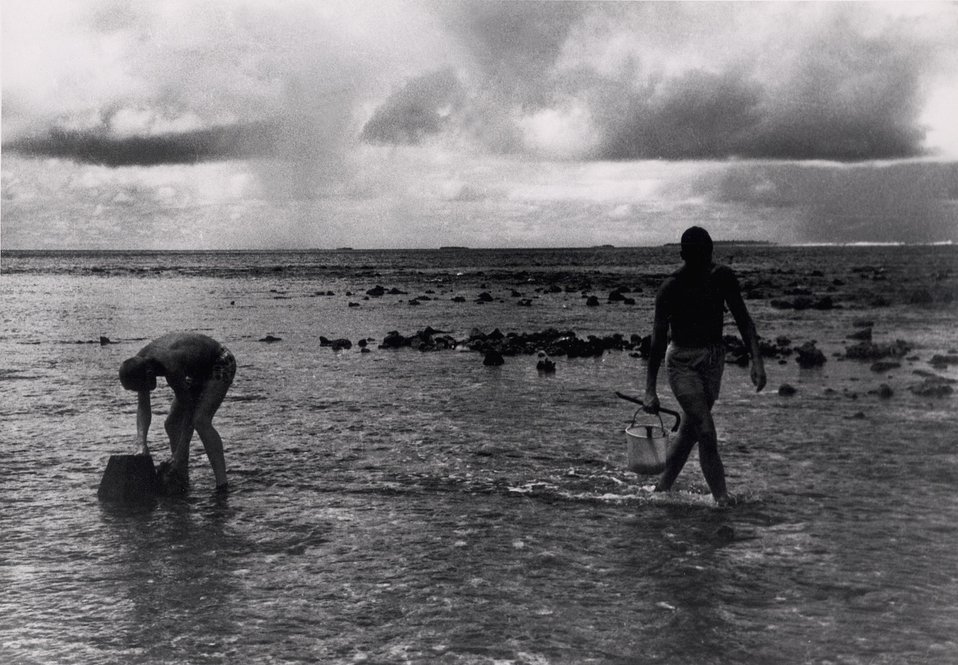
Scientists collect biological specimens on the Ocean Reef, Eniwetok Atoll after nuclear testing.